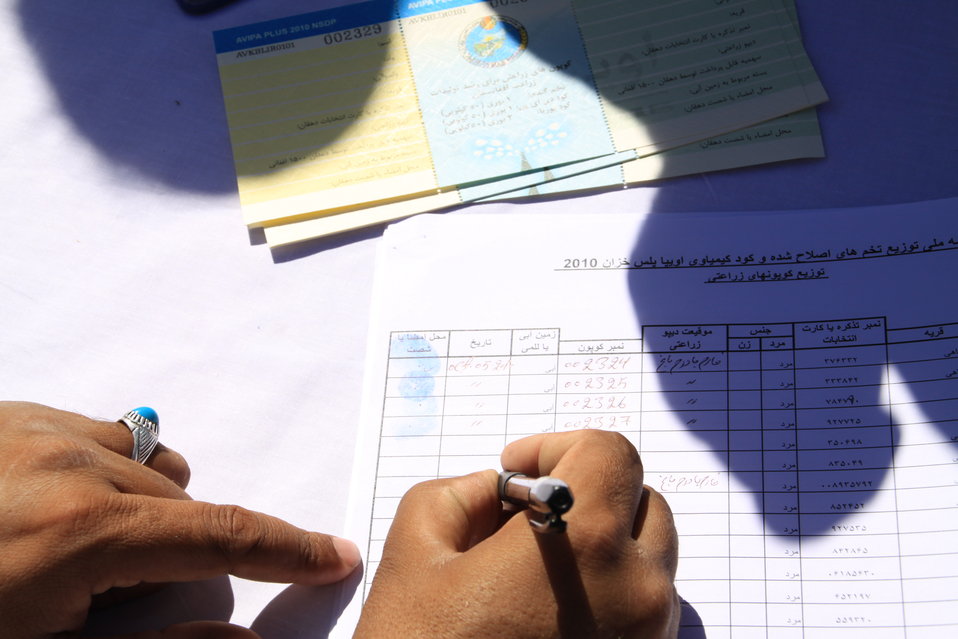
AVIPA Plus Wheat Seed Distribution 101005

US Ambassador Karl Eikenberry and USAID Acting Mission Director Kevin Brownawell joined the Minister of Agriculture, Irrigation and Livestock, H.E. Minister Mohammed Rahimi in signing a Memorandum of Understanding and distributing vouchers to area farmers for wheat and fertilizer.

US Ambassador Karl Eikenberry and USAID Acting Mission Director Kevin Brownawell joined the Minister of Agriculture, Irrigation and Livestock, H.E. Minister Mohammed Rahimi in signing a Memorandum of Understanding and distributing vouchers to area farmers for wheat and fertilizer.

US Ambassador Karl Eikenberry and USAID Acting Mission Director Kevin Brownawell joined the Minister of Agriculture, Irrigation and Livestock, H.E. Minister Mohammed Rahimi in signing a Memorandum of Understanding and distributing vouchers to area farmers for wheat and fertilizer.